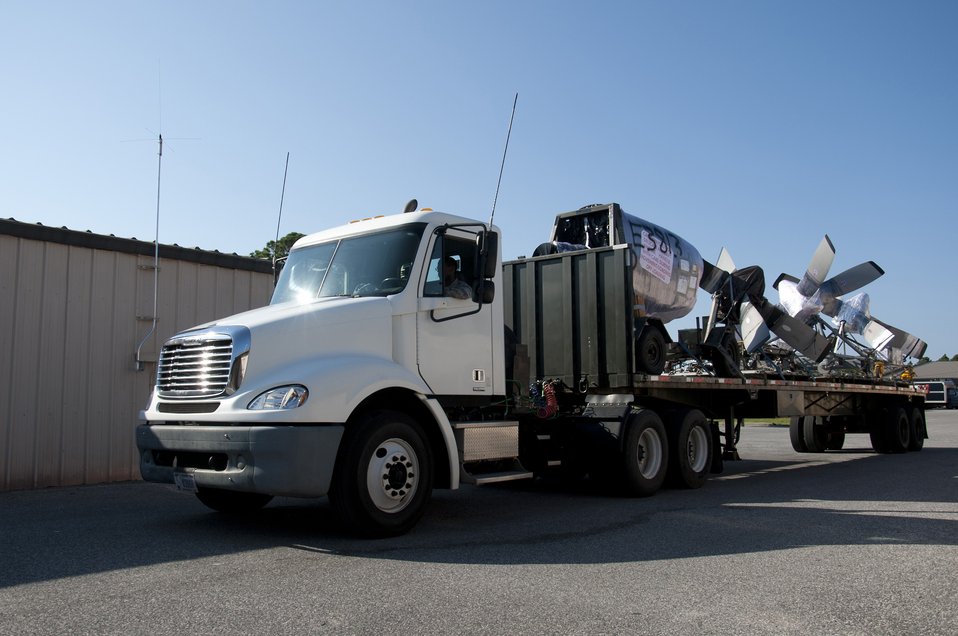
Tropical Storm Preparation

Staff Sgt. Raymond Davis prepares to transport aircraft parts off-base in preparation for Tropical Storm Isaac at Hurlburt Field, Fla., Aug. 26, 2012. Hurlburt Field assets were being evacuated as Tropical Storm Isaac approaches the Gulf Coast region. Davis is the assistant NCO in charge with the 1st Special Operations Logistics Readiness Squadron.